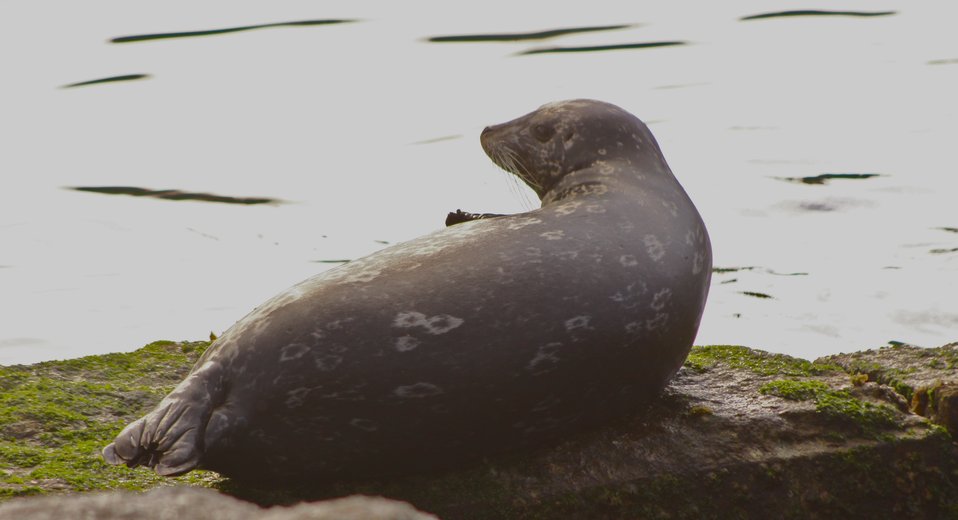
Harbor seal portrait at Granite Canyon. Harbor seals usually spend about half of their time resting on land, with the other half spent feeding on fish, crustaceans, squid, and octopus in the ocean.